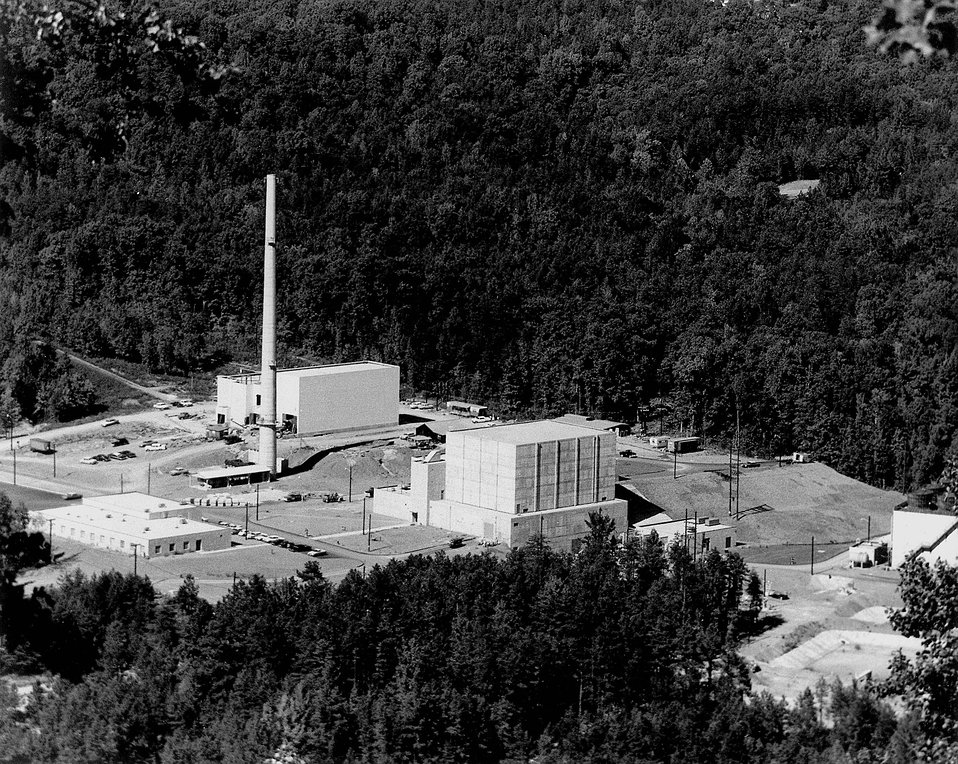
Nestled in a wooded valley at oak Ridge National Laboratory is the High Flux Isotope Reactor (HFIR) which started its first nuclear operation August 25, 1965. c. 1966